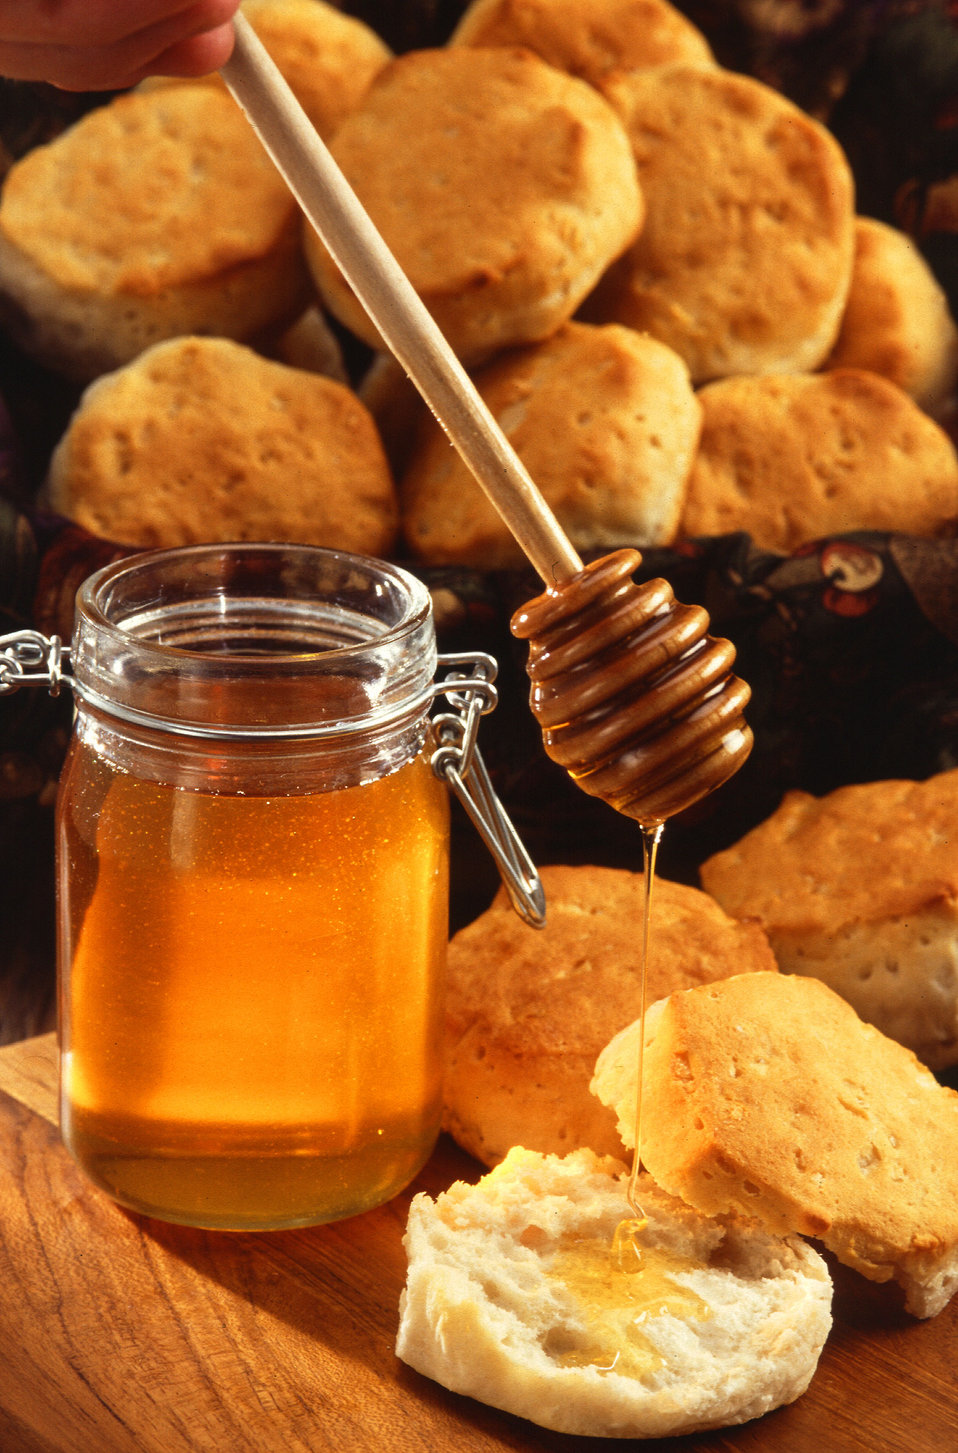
U.S. Department of Agriculture (USDA) Agriculture Research Service (ARS) researchers wrote the definitive report on the composition and properties of honeys after analyzing hundreds of samples. These findings made it possible to detect the addition of other substances to honey. A side benefit was the discovery of a new sugar in honey, which was named erlose, after ARS's Eastern Regional Research Laboratory.